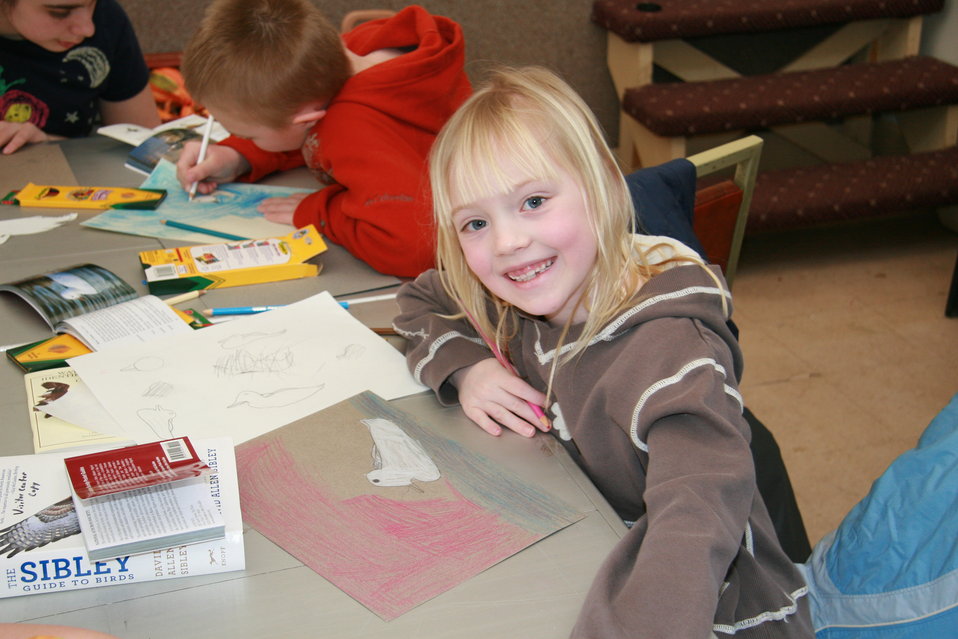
Young Girl and Junior Duck Stamp Artwork - North Dakota

Participant in the Jr. Duck Stamp Program in North Dakota. Great Ross's Goose!